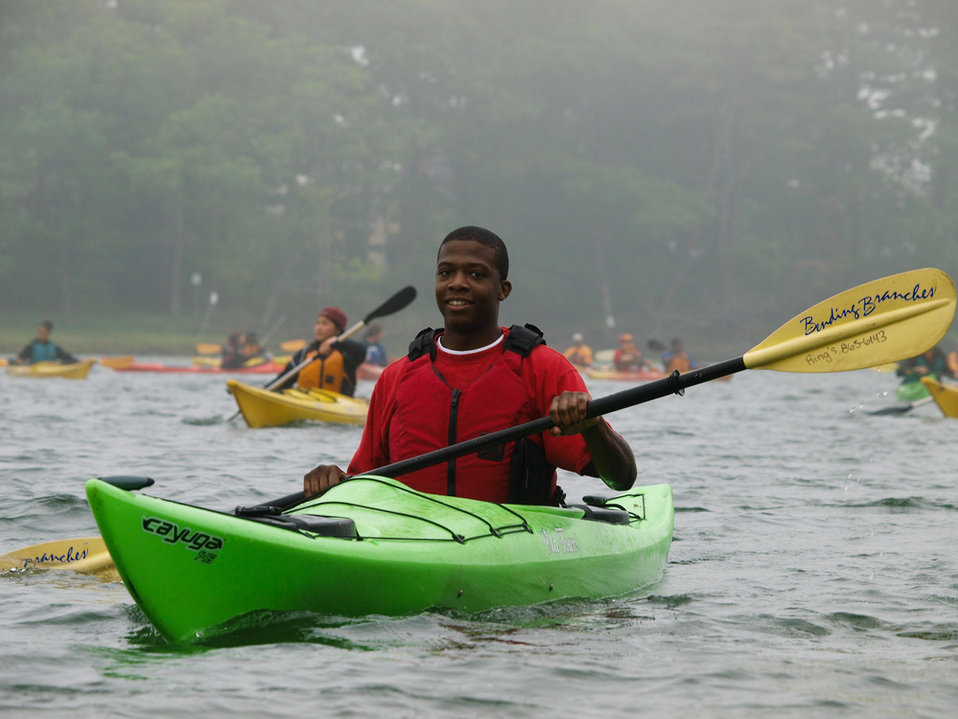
Tajaun Levy - 2010 Annual CIP kayaking trip

U.S. Fish and Wildlife Service